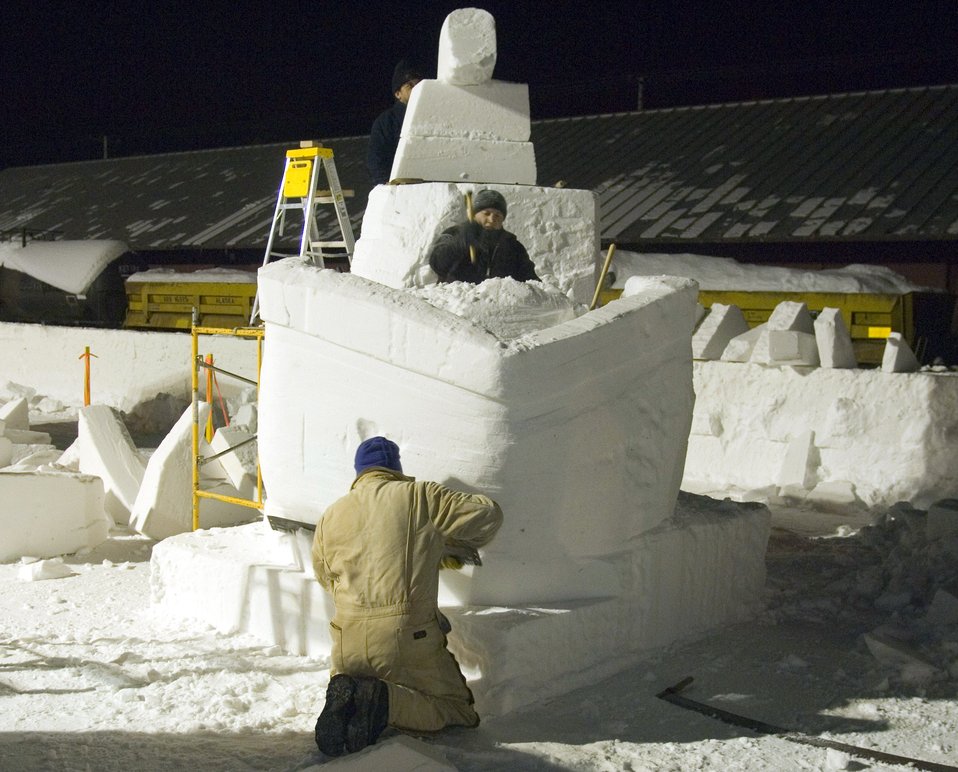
Elmendorf team perfects snow sculpting skills

Eric Zimmerman (kneeling), Staff Sgt. Edward Tompkins and Mitchell Manzo (on ladder), comprising the Elmendorf Air Force Base snow sculpting team, work late into the night Feb. 23 carving out a pirate ship during the Anchorage, Alaska, Fur Rendezvous snow sculpture competition. The team pushed through the exhaustion of freezing temperatures and long hours of labor to vie for a chance to be invited to the 2008 National Snow Sculpting Championship in Lake Geneva, Wis.